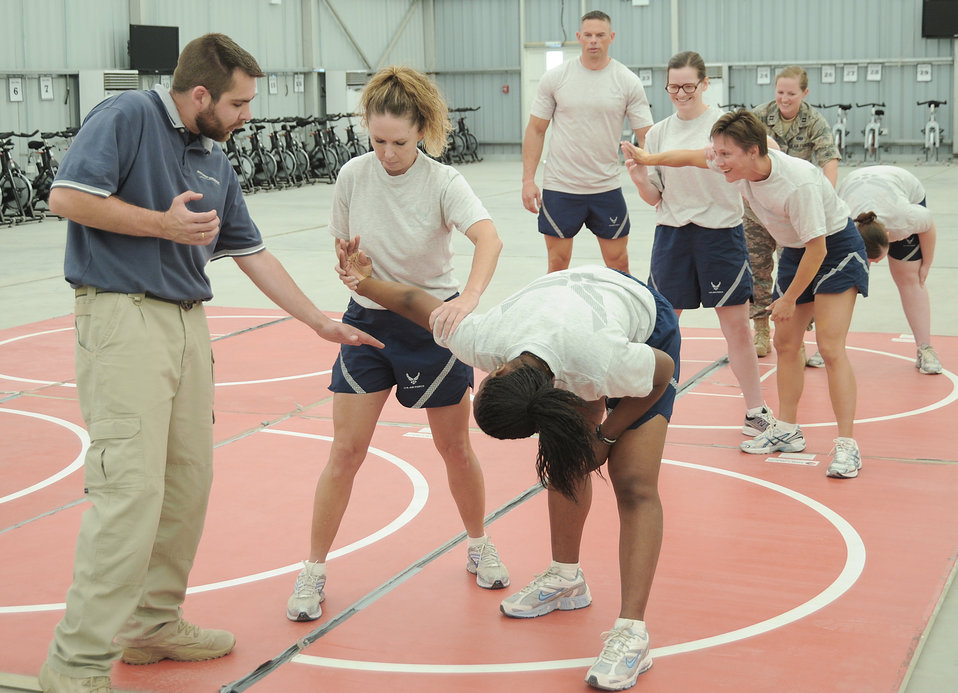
Getting defensive

Rick Baldwin and Tech. Sgt. Rob Goddard (background) instruct students on self-defense techniques April 18 at an air base in Southwest Asia. The sexual assault response coordinator sponsored the training that gave students the chance to learn techniques to defend themselves from attack. Mr. Baldwin is a contractor and Sergeant Goddard is assigned to the 380th Expeditionary Security Forces Squadron.